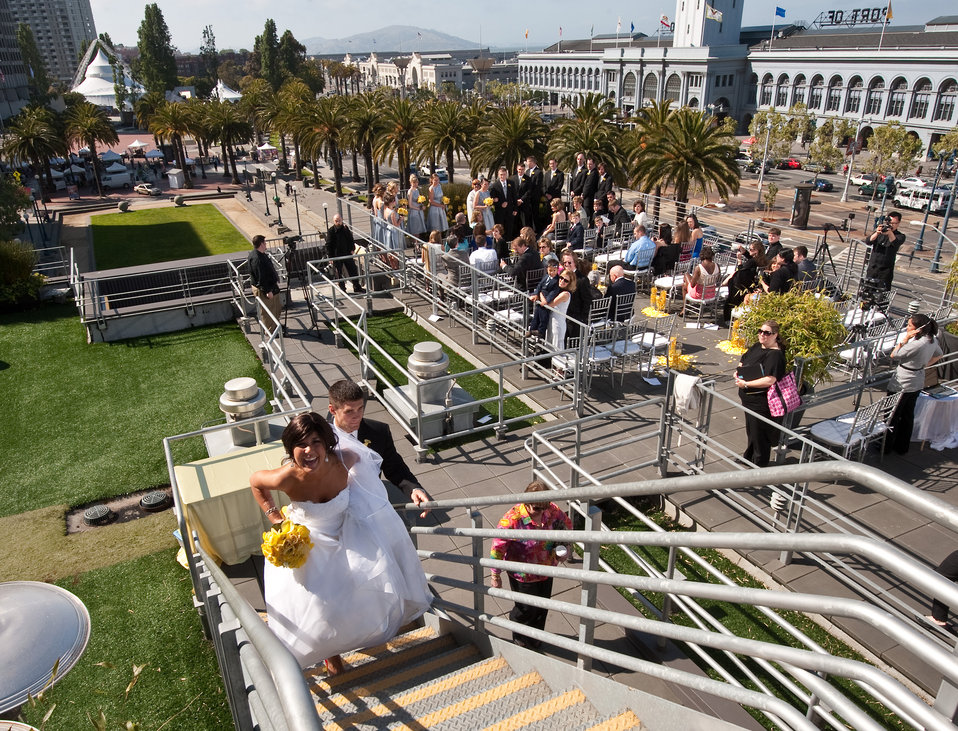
San Francisco Dream Wedding

Vanessa Muza Teskey and Capt. Mike Hawkins were just married on the rooftop of the Hotel Vitale on San Francisco's waterfront May 14, 2010. They won the San Francisco Dream Wedding Giveaway with viewer votes. Mrs. Hawkins has been diagnosed with stage IV Hodgkin's lymphoma. Vendors donated $100,000 of goods and services to the couple's wedding day.